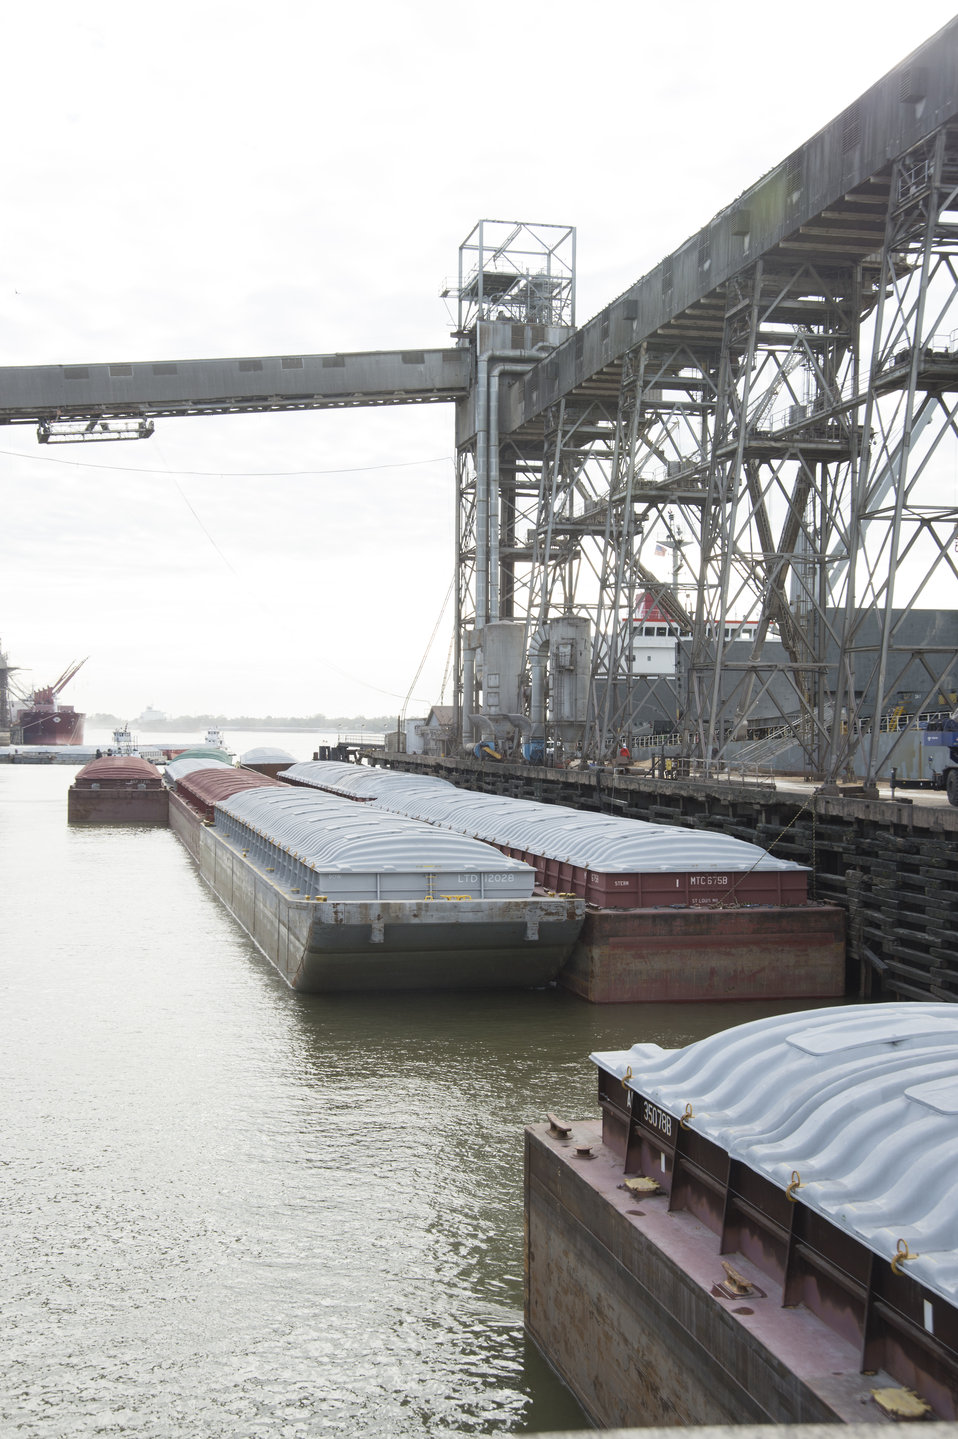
Barges are lined up waiting to transfer grain to storage facilities near the Port of New Orleans in New Orleans, LA on Tuesday, Nov. 19, 2013.